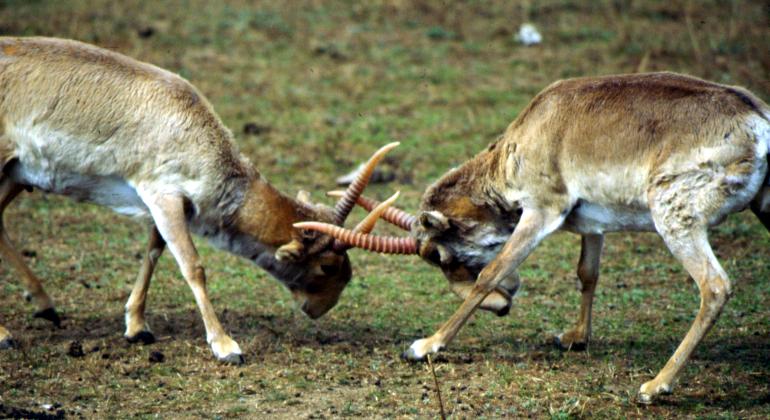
Saiga Fight 3

Saiga antelope.